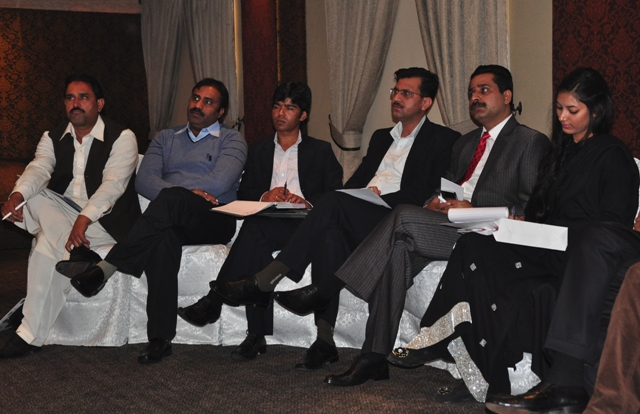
Education Workshop 261